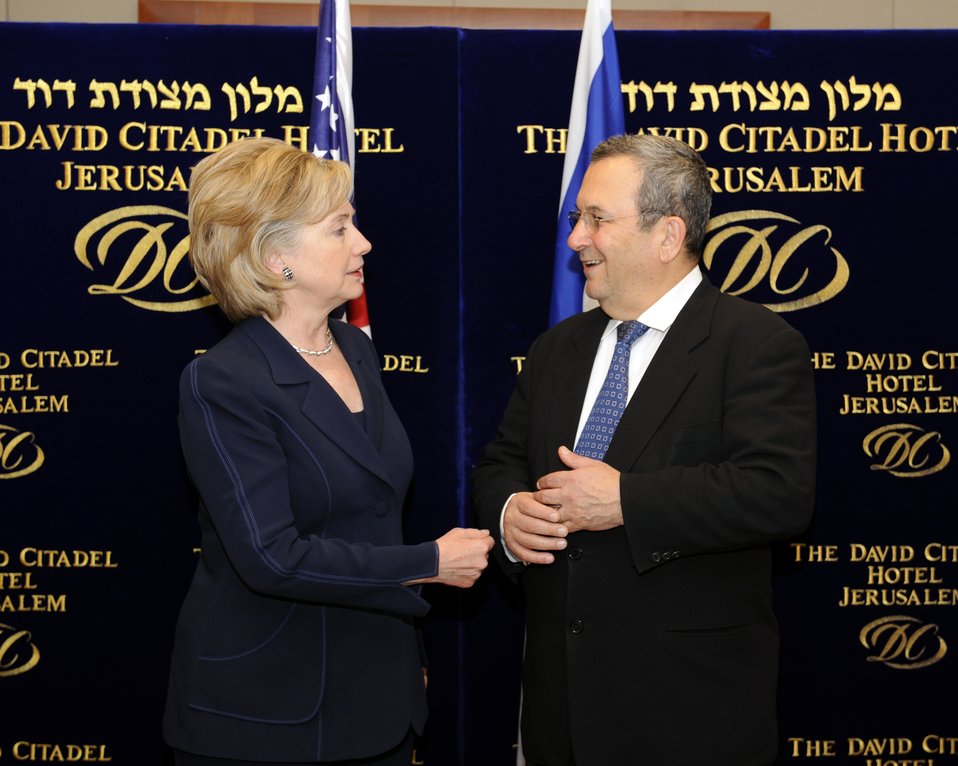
Secretary Clinton Meets With Israeli Minister of Defense

U.S. Secretary of State Hillary Rodham Clinton meets with Israeli Minister of Defense Ehud Barak in Jerusalem October 31, 2009.